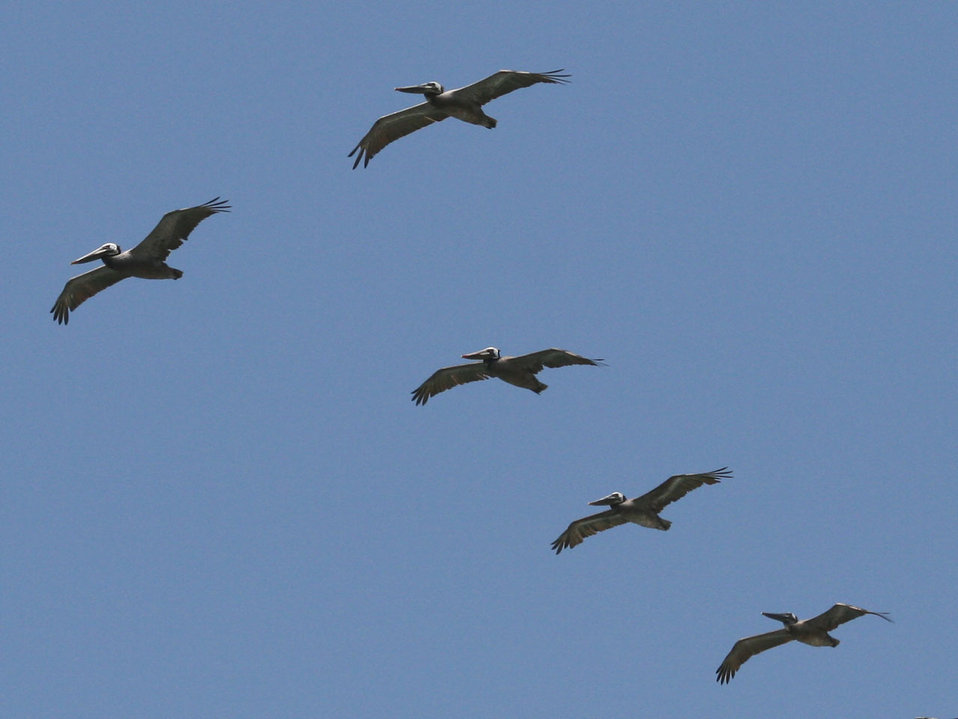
Pelicans flying overhead

Shot from huntington beach pier, huntington beach, ca.